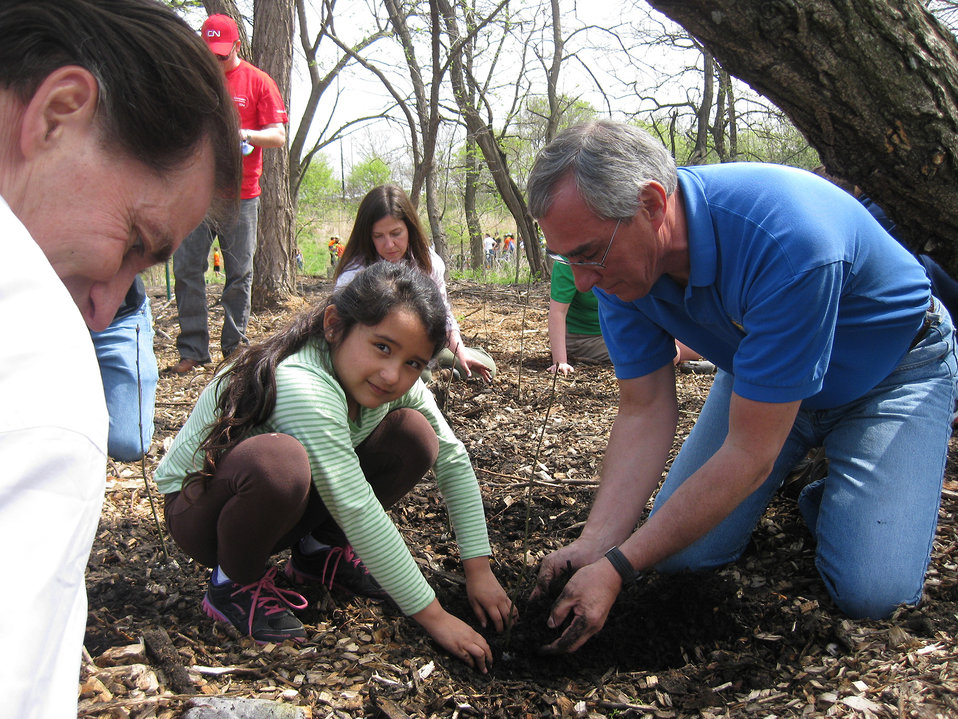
FWS Director Dan Ashe and R3 RD Tom Melius help kids plant seedlings

Chicago Park District Burnham Corridor Community Planting Day
May 10, 2014
Photo by USFWS; Louise Clemency